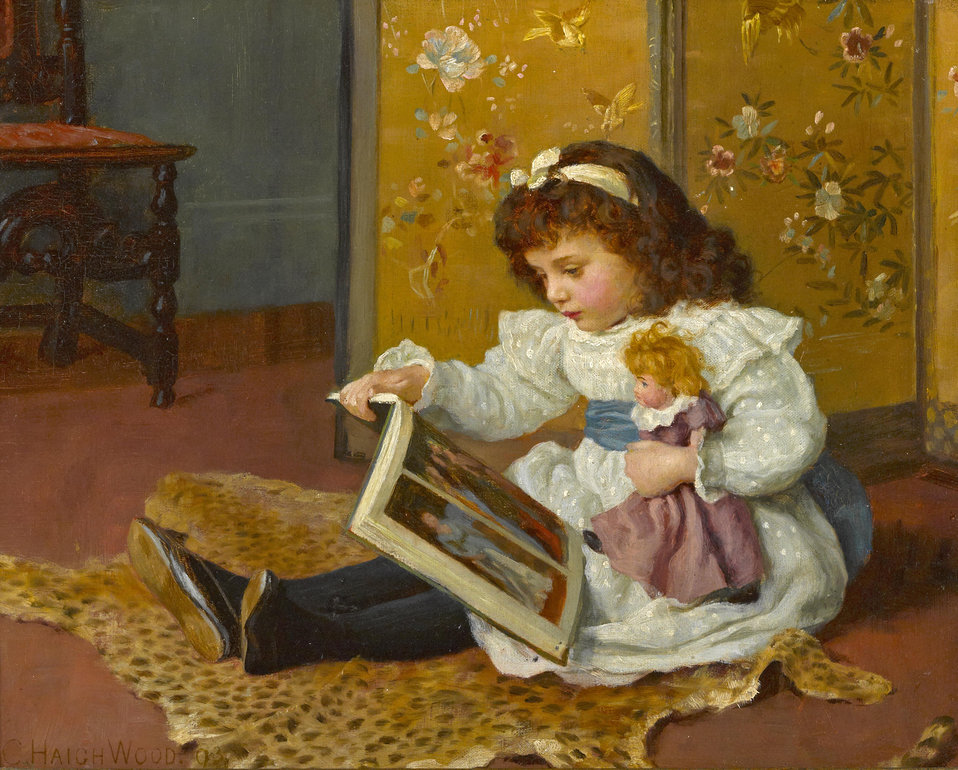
Storytime; signed and dated 'C. Haigh Wood 93' (lower left); oil on canvas; 30 x 38 cm